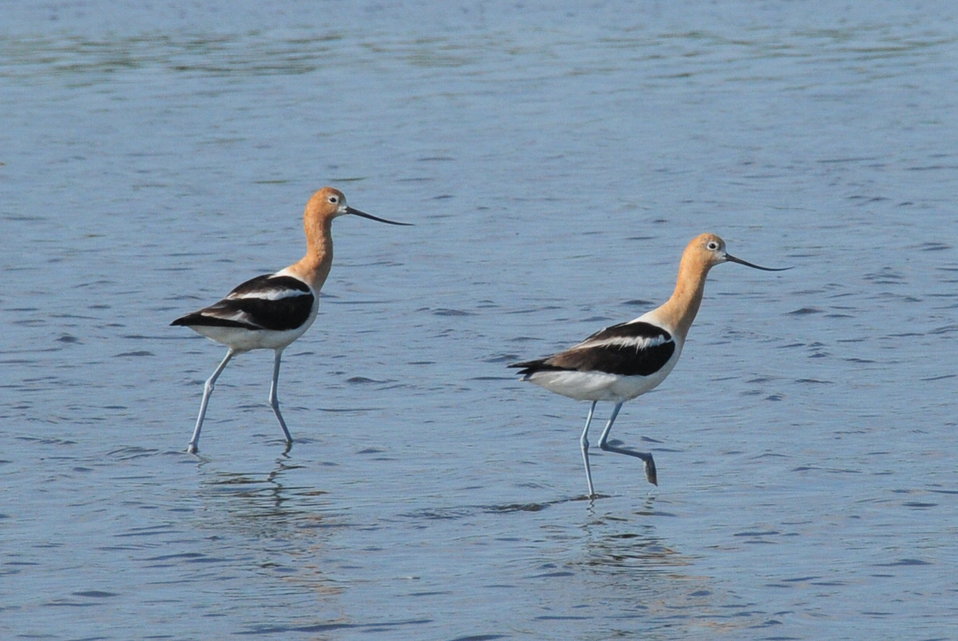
American Avocet Pair on Sand Lake NWR